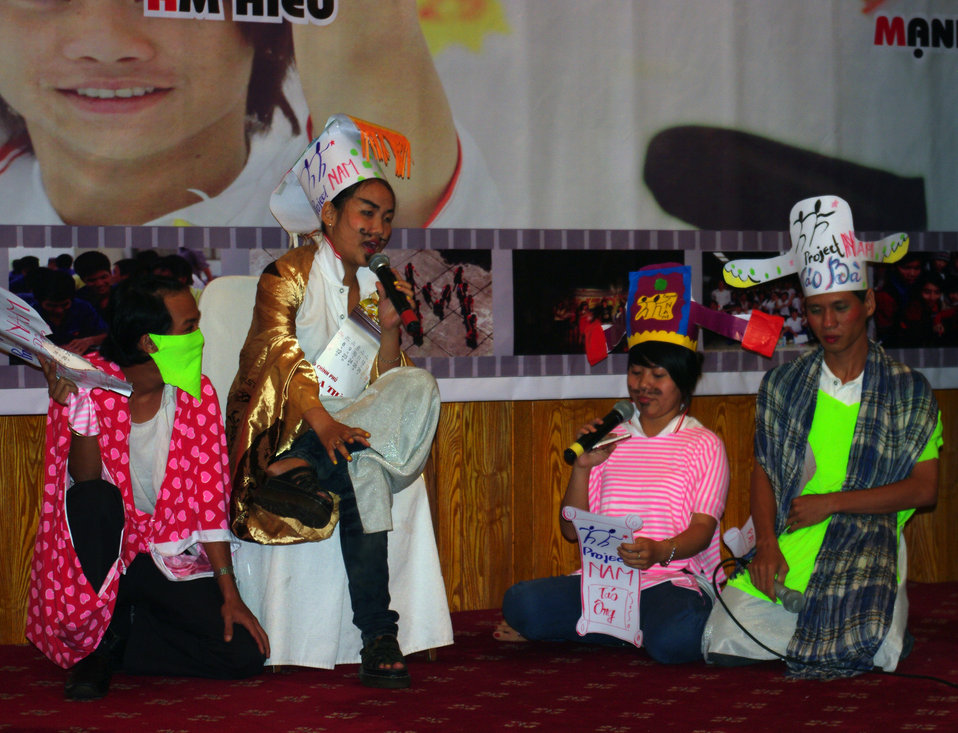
USAID Supports HIV Awareness among Street Youth and Young Men

Trainers and peer educators tell their stories on November 29, 2011, in Hanoi, Vietnam